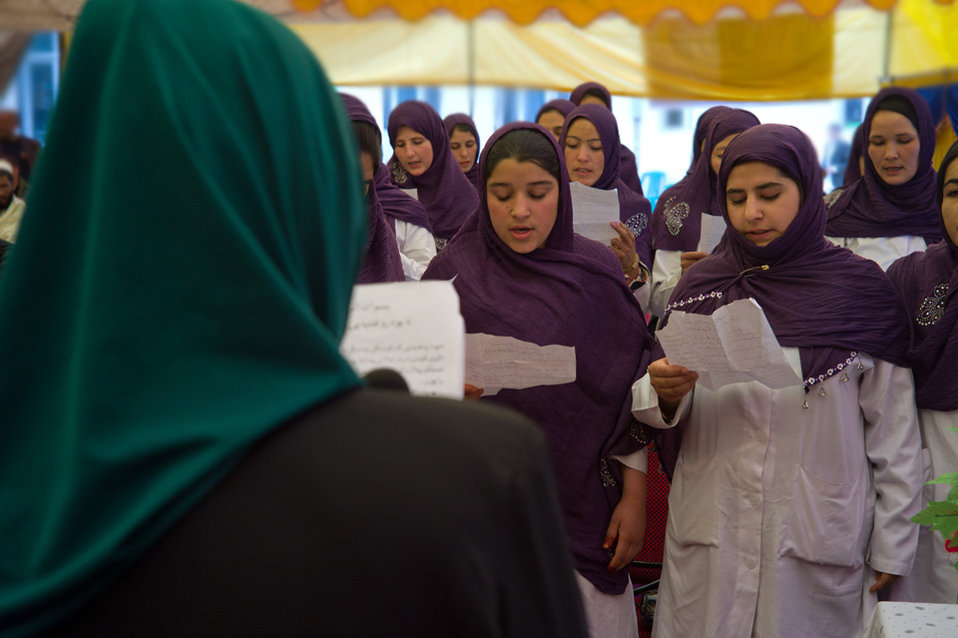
Taking the Midwife's Oath 2